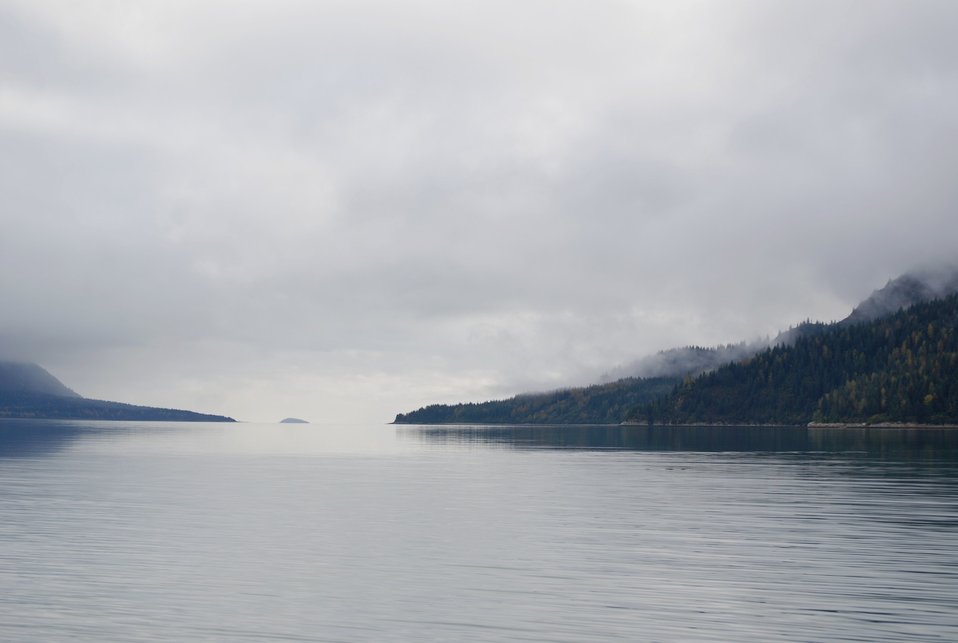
Looking south toward Glacier Bay from Blue Mouse Cove